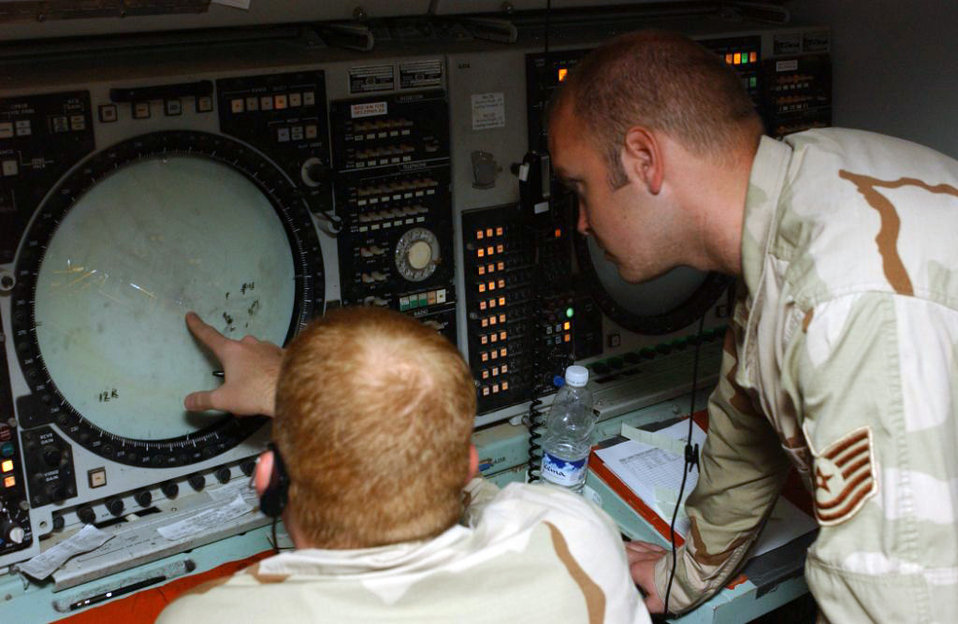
Controllers handle one-third of Iraqi airspace

Staff Sgt. Scott Williams (left) goes over aircraft positions before turning over the radar to Tech. Sgt. Andrew Peters at the Ali Base area control center in Iraq.